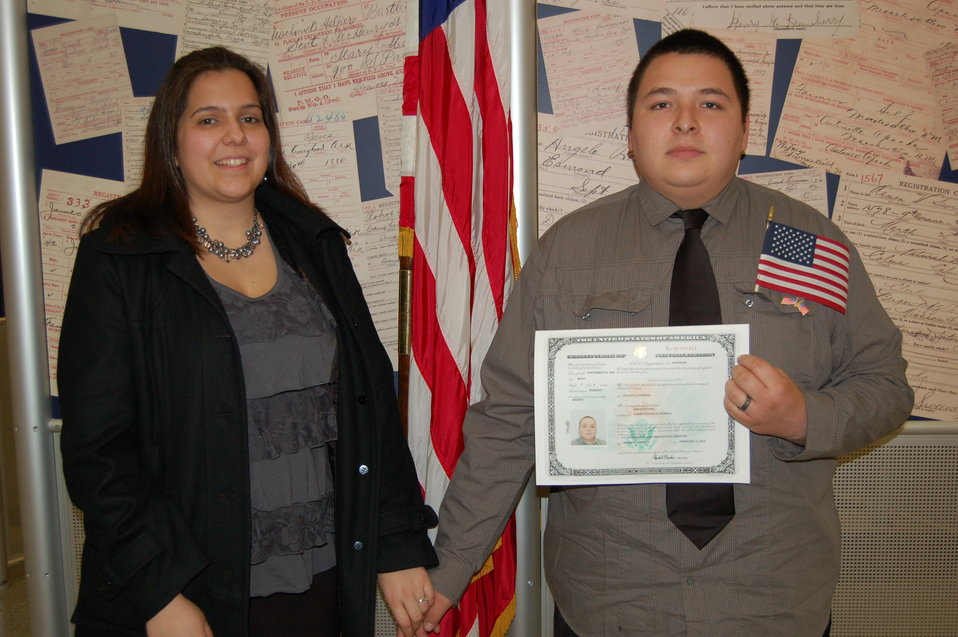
New Citizens